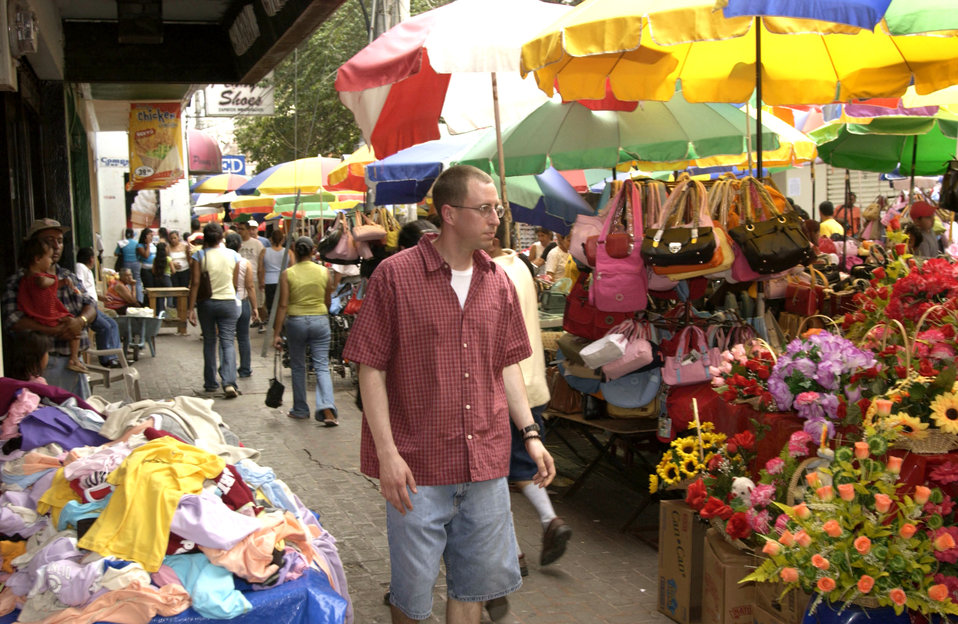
For U.S. troops, Tegucigalpa's good life has its dangers

TEGUCIGALPA, Honduras -- Capt. Cliff Bayne looks for souvenirs in a market off Plaza Morazan, the capital city's main plaza. The captain is serving a four-month tour at Soto Cano Air Base, Honduras, where he's a logistics officer for Joint Task Force-Bravo.